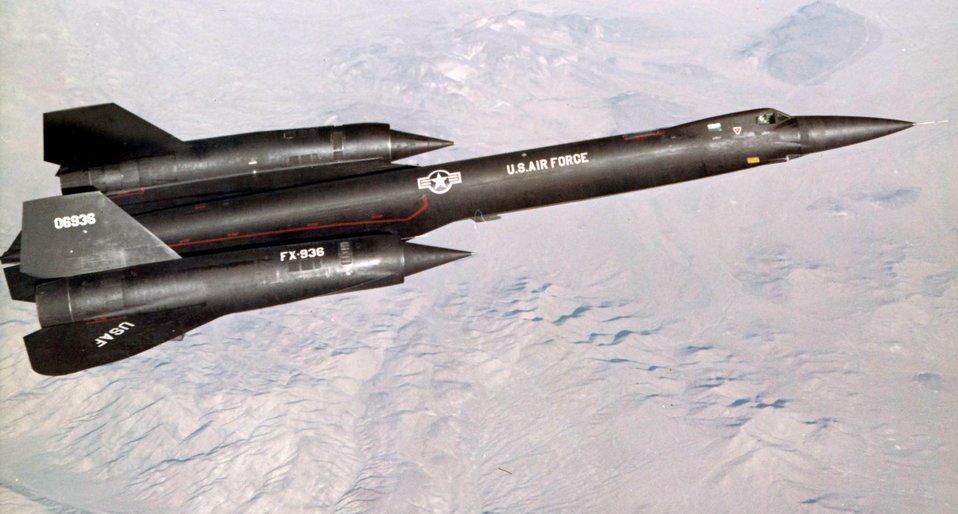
YF-12 flies test mission

The Lockheed YF-12 flies a test mission near Edwards Air Force Base, Calif.